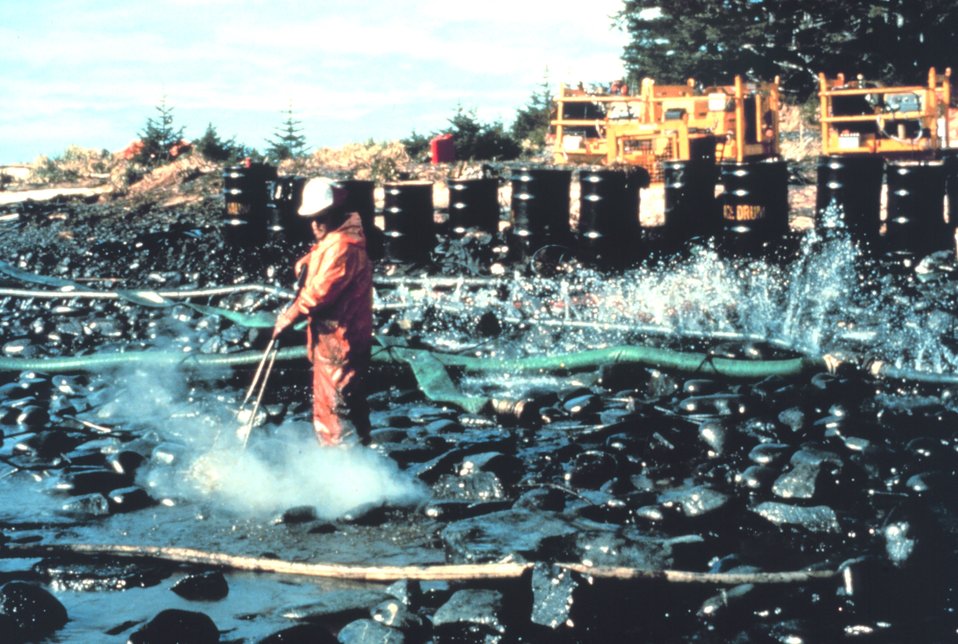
Steam cleaning rocks